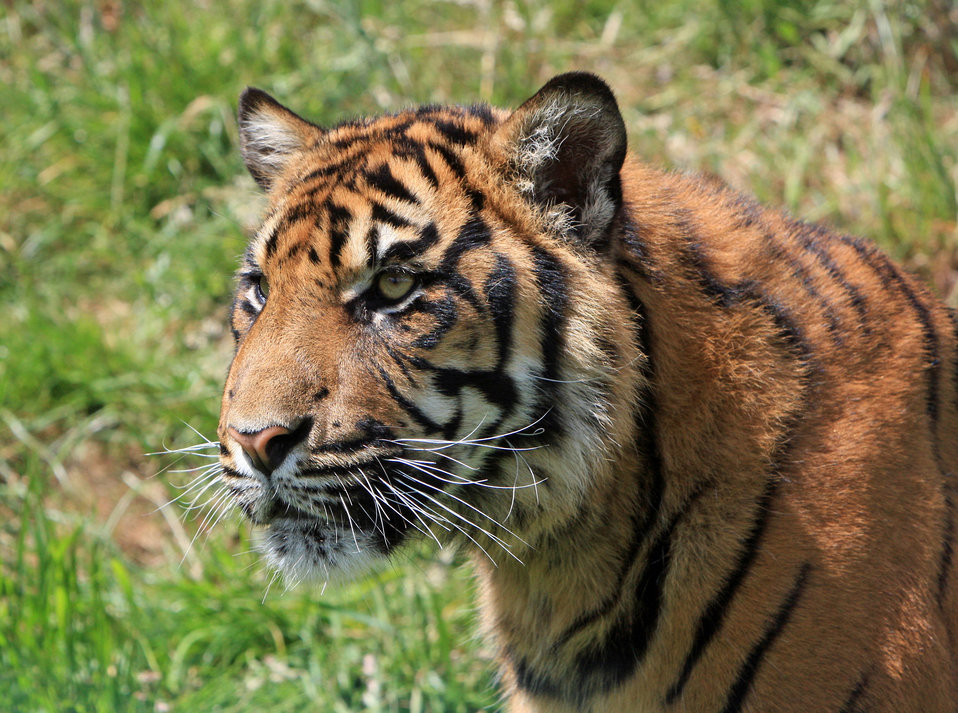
Tiger cub

Close-up photo portrait of a young sumatran tiger cub head.